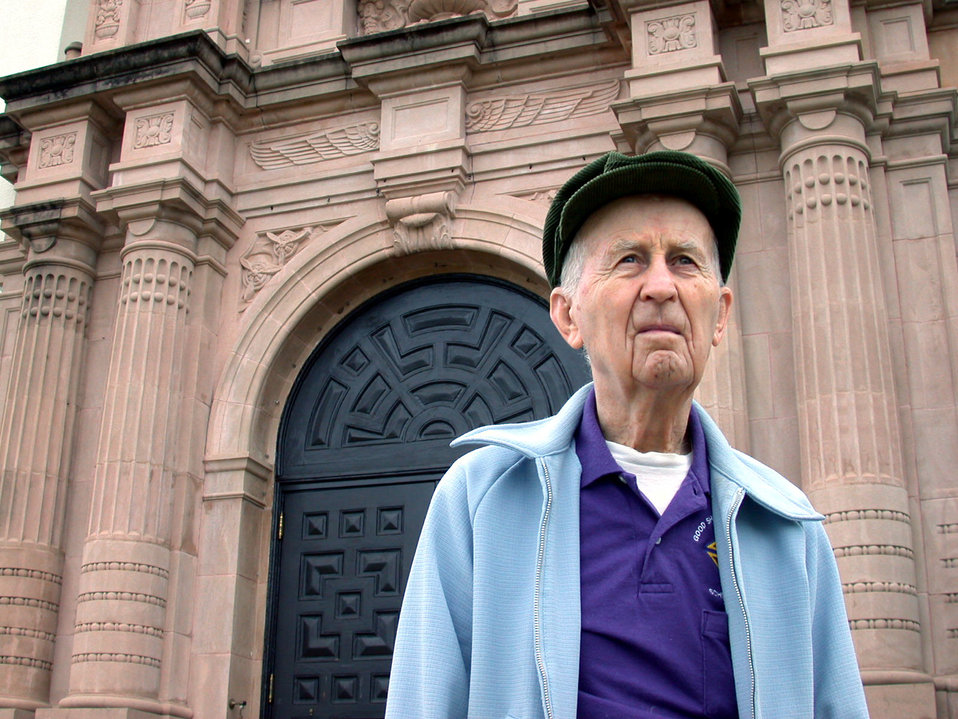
The volunteer

RANDOLPH AIR FORCE BASE, Texas -- Martin